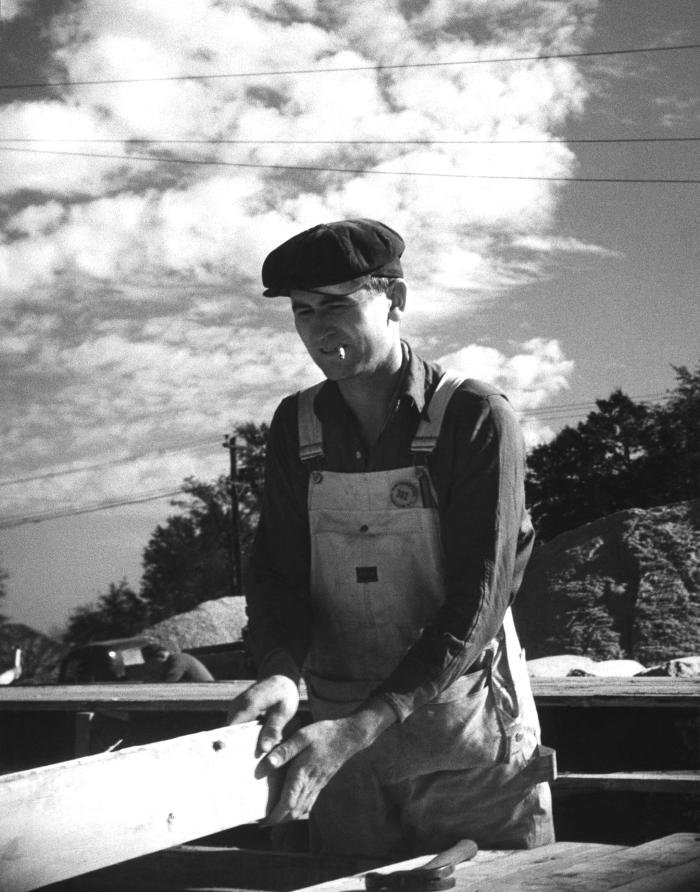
Provided by the Center for Disease Control's (CDC), National Institute for Occupational Safety and Health (NIOSH), this historic 1943 image depicted a male construction worker on a construction site in the process of handling a wooden plank. Note that the man was wearing no protective gear such as goggles, filtered breathing mask, or gloves. Also note the he was smoking a cigarette. It cannot be determined from this photograph whether or not the was using a table saw, but modern day regulations, at minimum, call for use of protective eyewear.